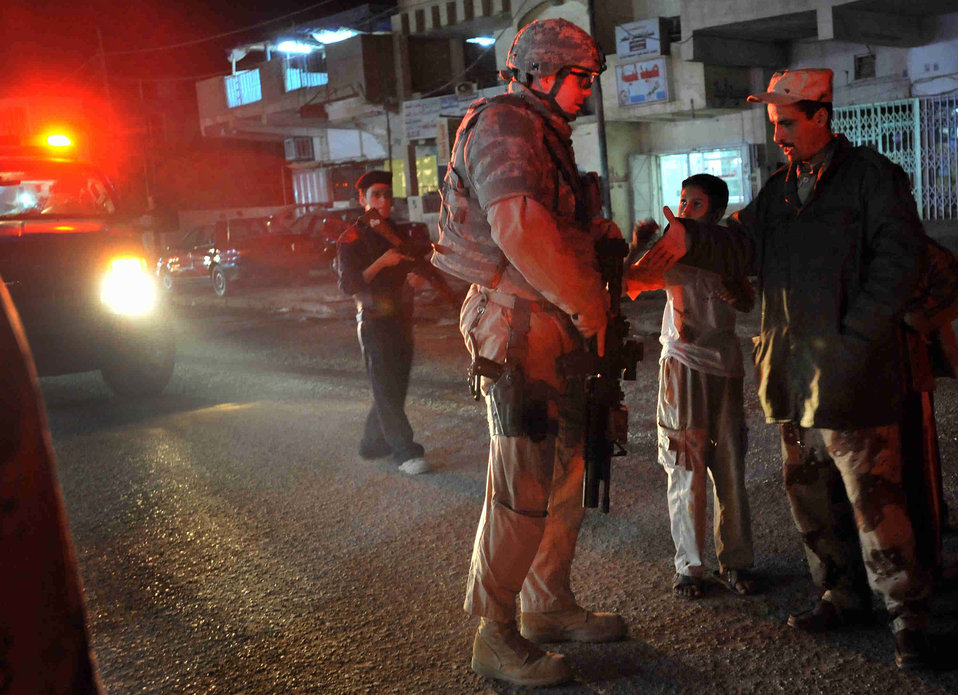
Security forces unit provides combat support to Iraq

Staff Sgt. Davy Huffman speaks with a Sons Of Iraq soldier during a night-time patrol along the 60th Street Market area meeting Iraqi civilians, handing out toys to the children and speaking with local business owners November 2008 in the Al Doura community located in southern Baghdad, Iraq. The Airman is assigned to Detachment 3, 732nd Expeditionary Security Forces Squadron with the 716th Military Police Battalion.